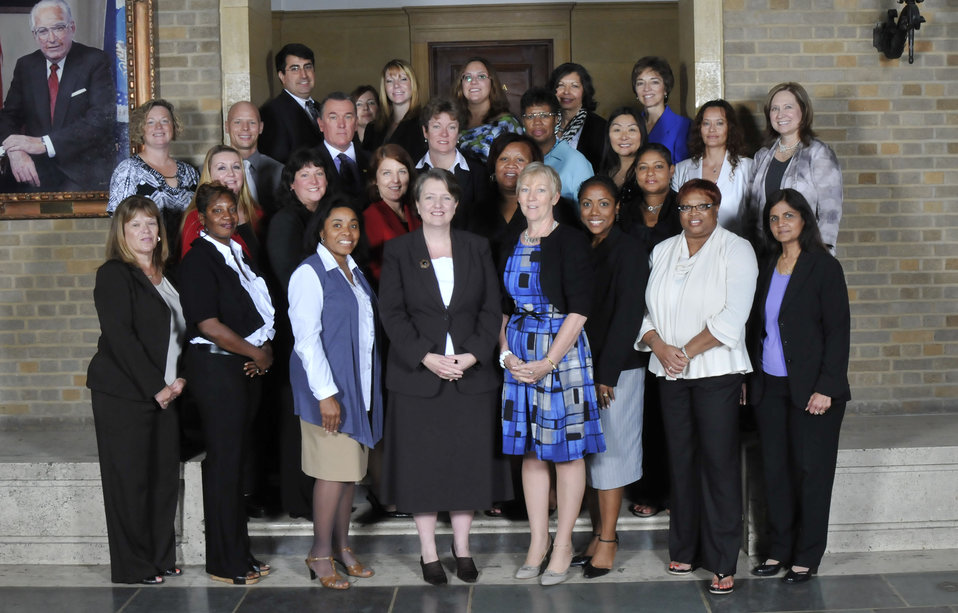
USDA HR Transformation Team
Office of Human Resources Management, Washington, DC.
Karen A. Messmore and William P. Milton Jr., Group Leaders
For the OHRM Team’s dedication and hard work resulting in the establishment of a world-class human resources organization that serves as a model for strategic human resources management.
On September 14, 2011 in the patio of the Whitten Building Patio of the US Department of Agriculture in Washington, DC.